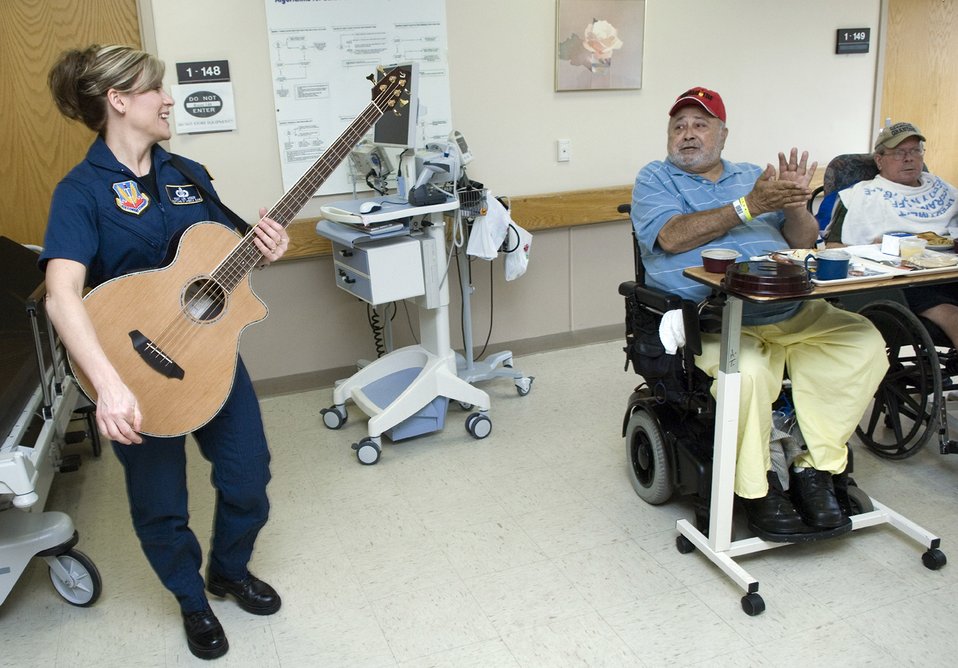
General leads morale tour at Tampa VA hospital

Master Sgt. Lori A. Weber and the members of the Air Force Heartland of America Band's Night Wing receive applause after a performance for servicemembers past and present April 5 at the James A. Haley Veterans' Hospital in Tampa, Fla. The band performed throughout the hospital to lift the spirits of military members. Night Wing is an country and rock ensemble of the Heartland of America Band headquartered at Offutt Air Force Base, Neb.